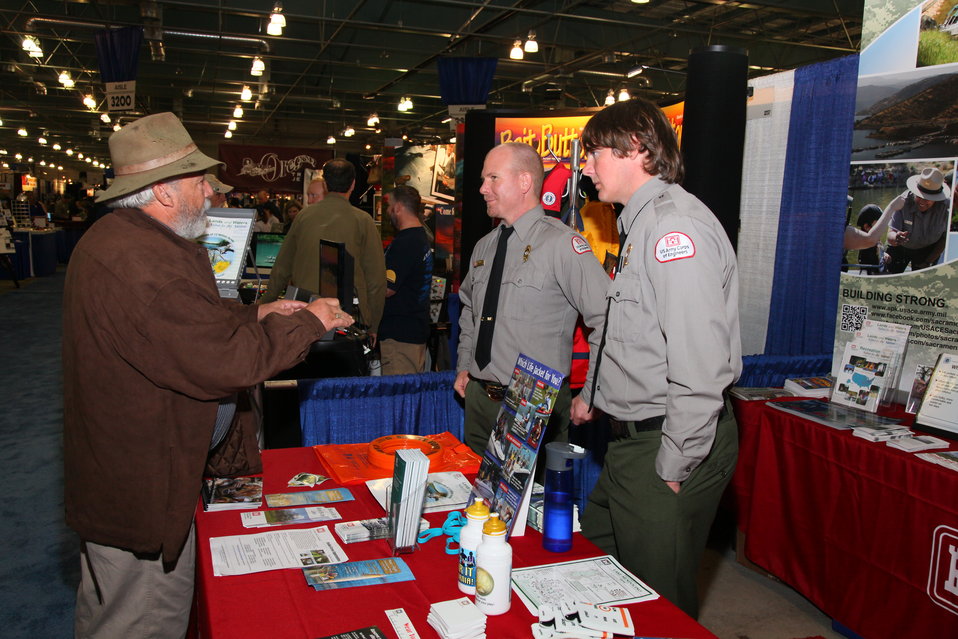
Corps park rangers promote water safety at the 2012 Sportsmen’s Expo

U.S. Army Corps of Engineers park rangers Josh Burkhead (right) and Thomas Downs (center) talk about recreation opportunities at Corps parks with a visitor to the International Sportsmen’s Exposition in Sacramento, Calif., Jan. 20, 2012. Corps park rangers were on hand at the event to present and promote water safety tips and recreation opportunities at Corps parks.